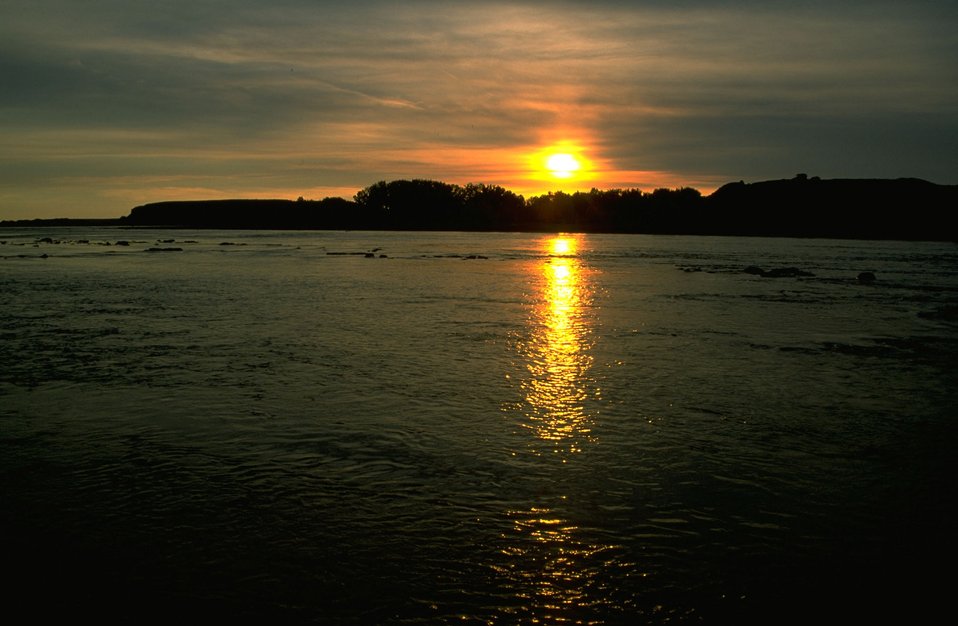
Sunset reflection on the Yellowstone River